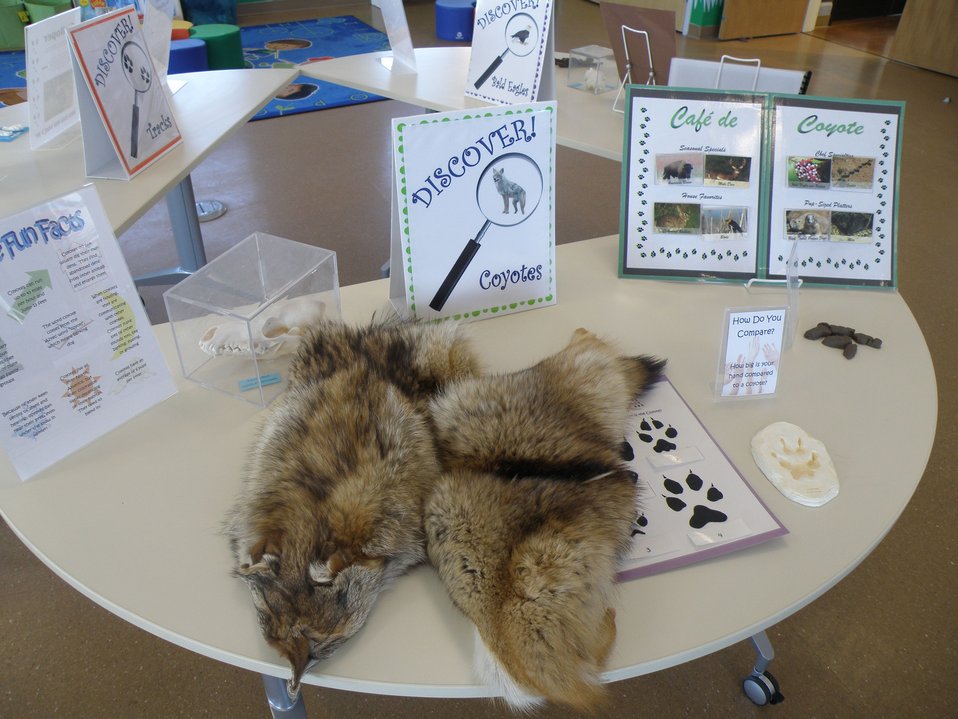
Discovery Room Coyote